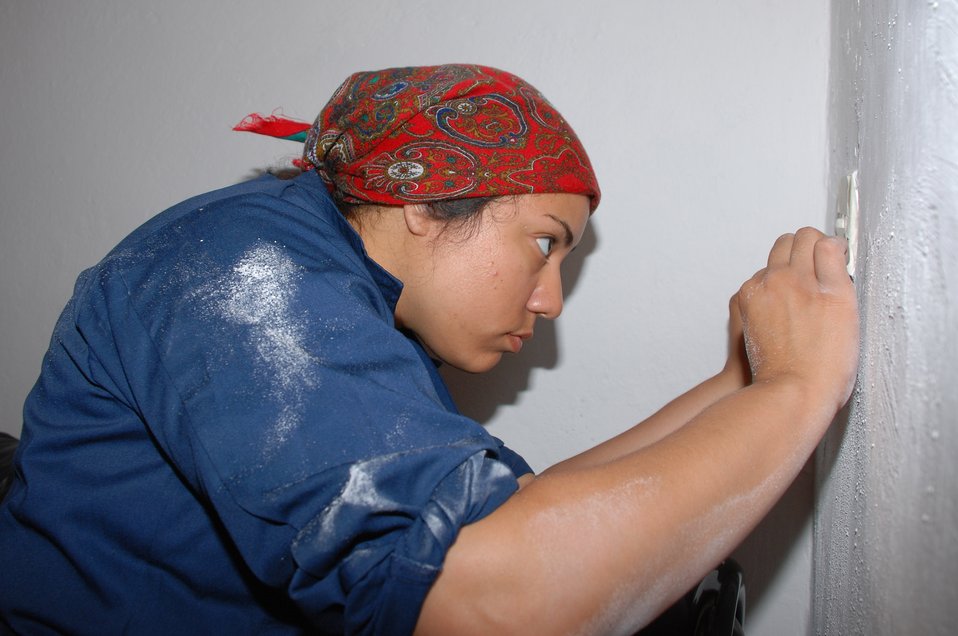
Camp Darby Airmen help Italian veterans

In the spirit of Rosie the Riveter, Airman 1st Class Jennifer Reiff concentrates on prepping a wall for painting during a volunteer effort to refurbish an Italian veterans hall in Livorno, Italy. Airman Reiff is with the 31st Munitions Squadron at nearby Camp Darby.